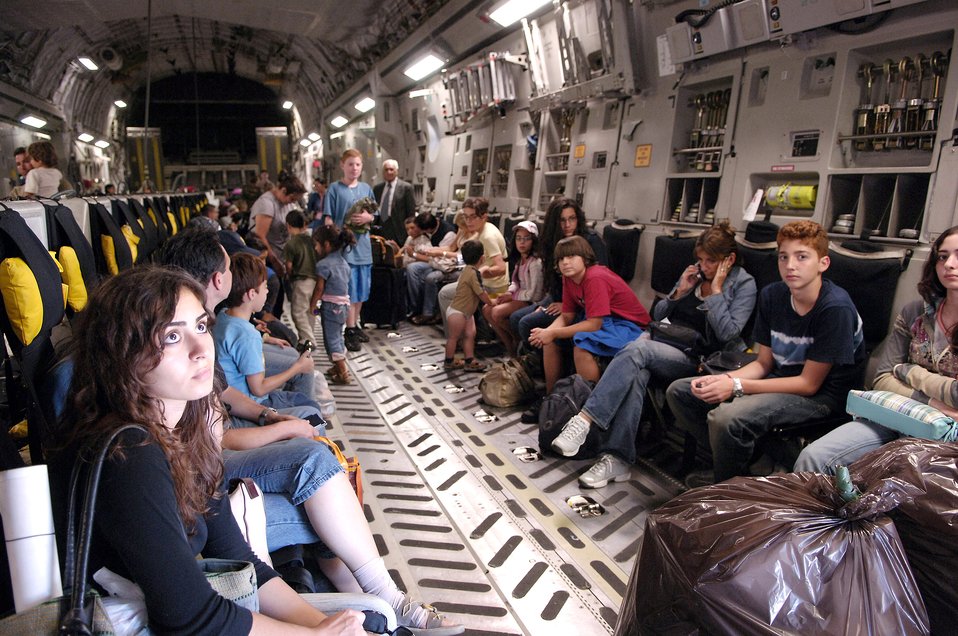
McGuire AFB provides humanitarian assistance

Ninety-five American citizens from Lebanon wait to depart a C-17 Globemaster III on Monday, July 24, at McGuire Air Force Base, N.J. McGuire is providing humanitarian assistance for American citizens who are leaving Lebanon to return home after more than a week of fighting between the Israeli military and the militant group Hezbollah. More than an expected 1,000 Americans began arriving at McGuire on July 23.